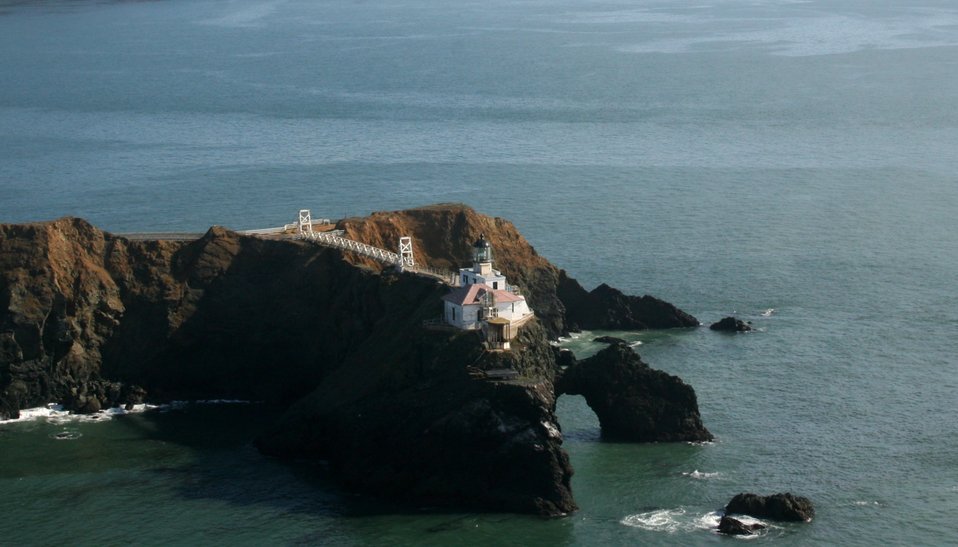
The Point Bonita Lighthouse at the northern entrance to the Golden Gate.